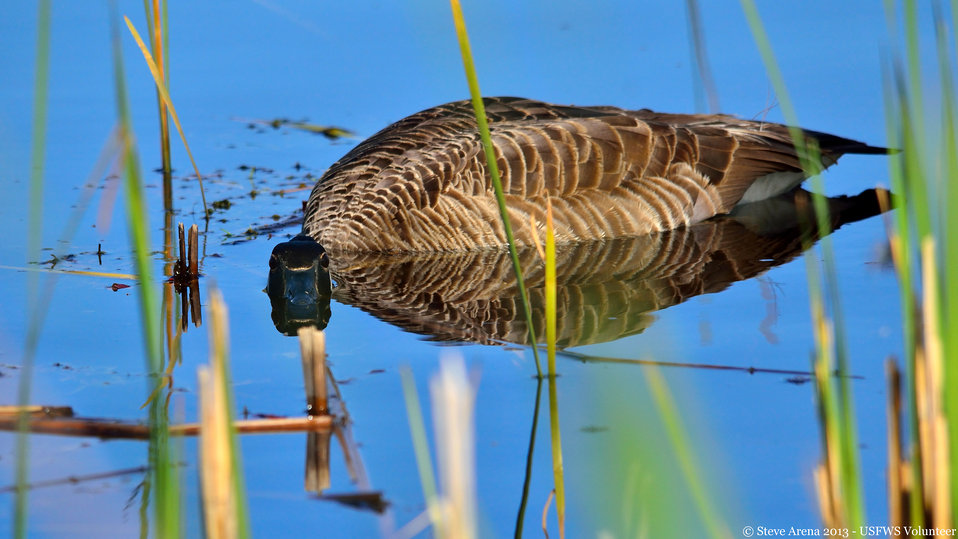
Canada Goose (Branta canadensis)

Canada Goose, Great Meadows NWR, Concord, MA

Credit: Steve Arena/USFWS

05 May 2013